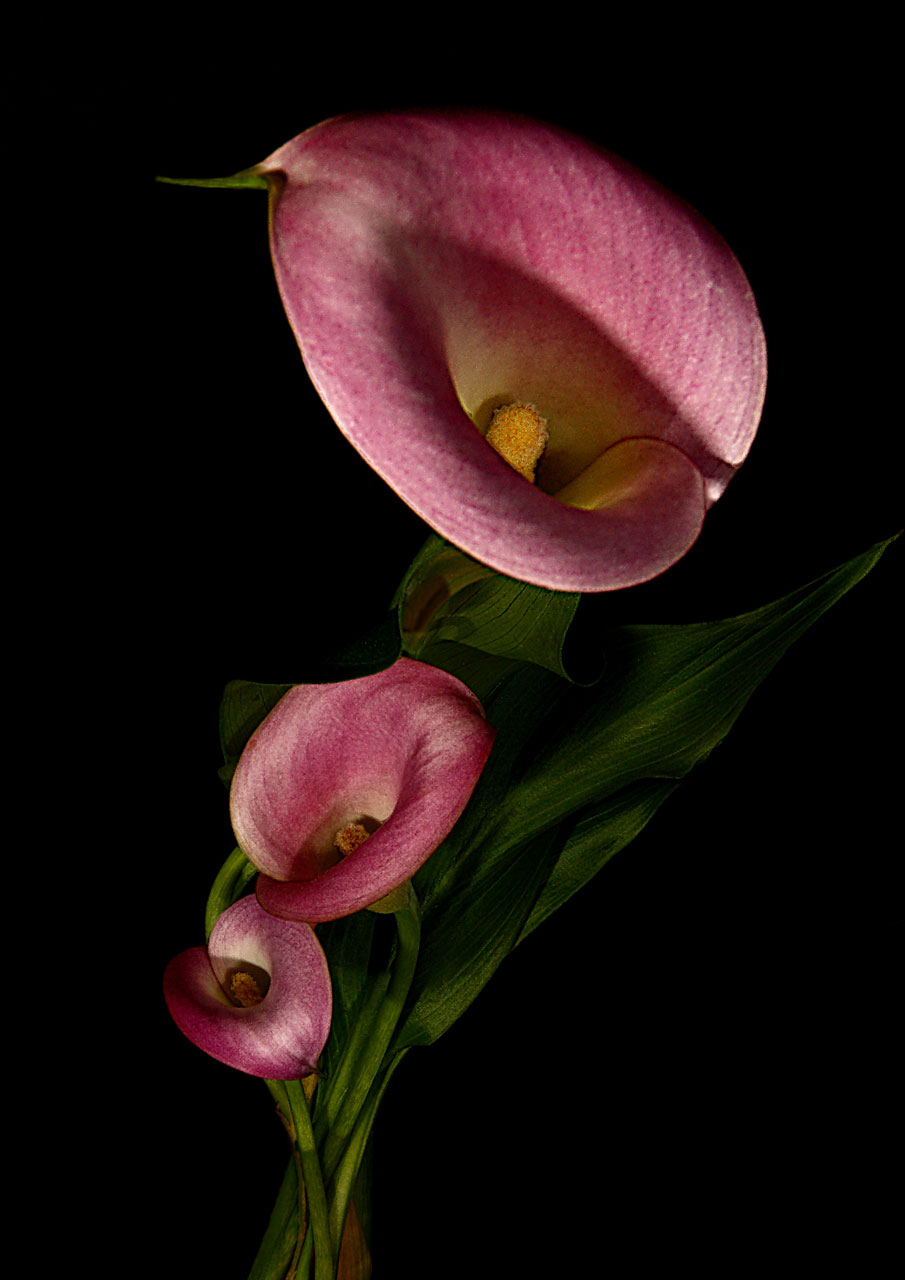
Calla trio

3 calla flowers.